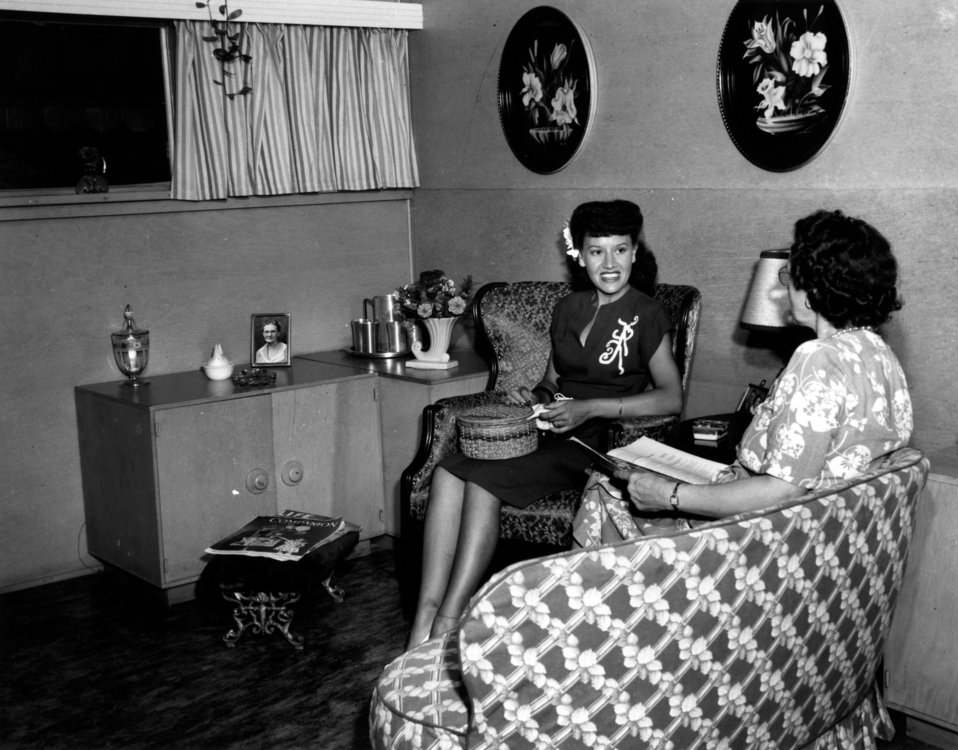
Housing at Oak Ridge